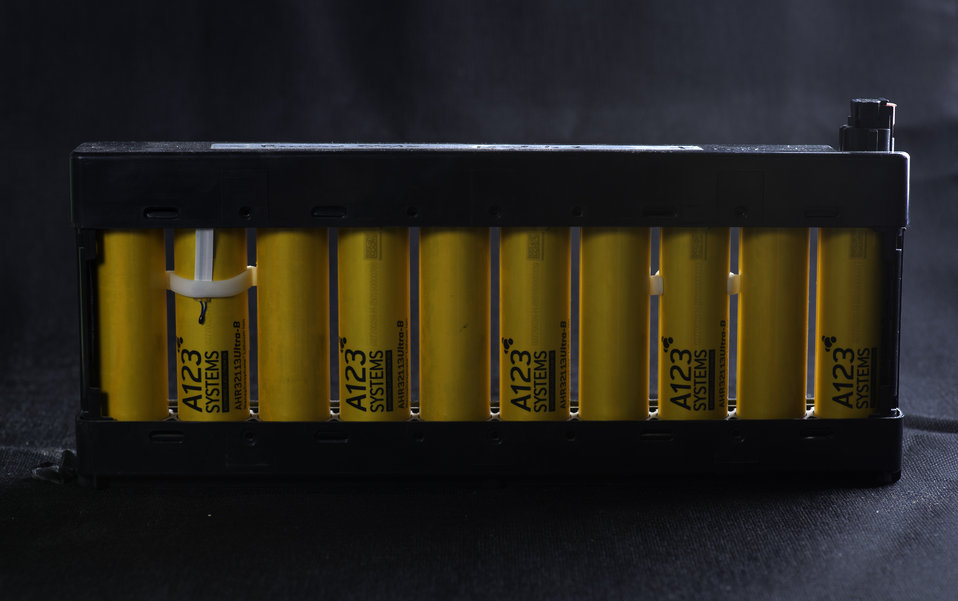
Battery pack being tested at the Thermal Test Facility at the National Renewable Energy Laboratory.